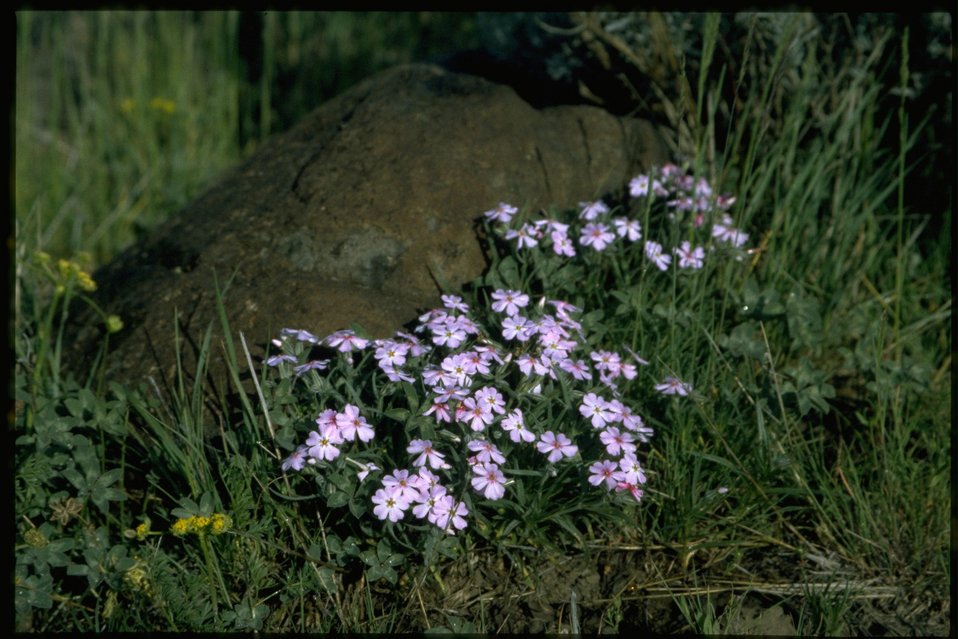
Medium shot of Longleaf Phlox, Phlox Longifolia, wildflowers.